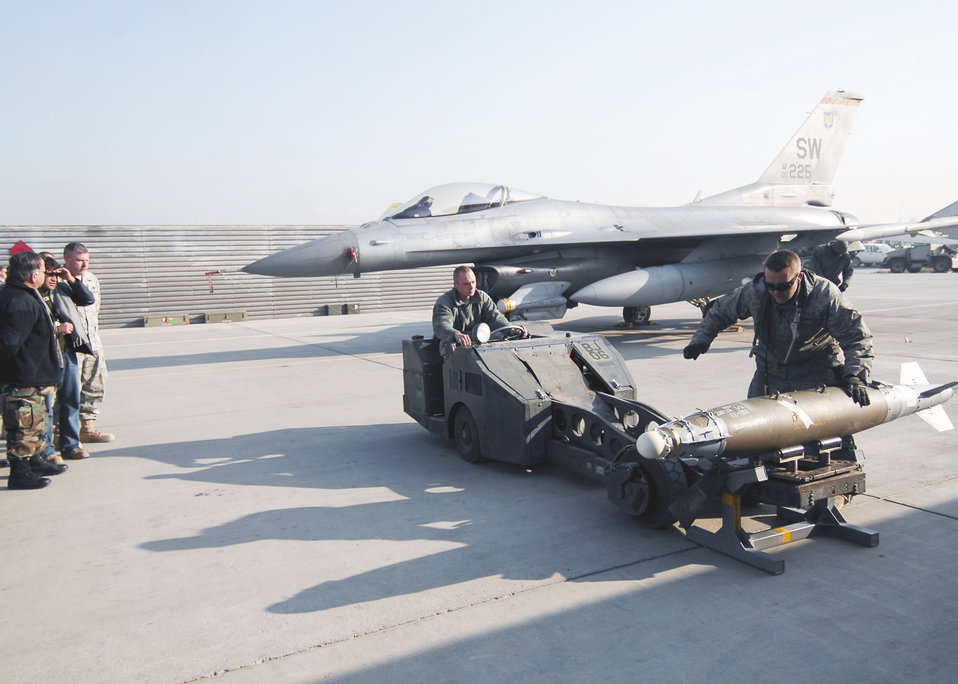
Partnership between air forces in the making

Staff Sgt. Sam Arpy prepares to lift a Joint Direct Attack Munition with a bomb-lift truck while Airman 1st Class John Ackerman prepares to tie down the bomb to the lift Dec. 19, 2009, at Bagram Airfield, Aghanistan. Both weapons load crew Airmen are demonstrating proper loading procedures for Afghan National Army Air Corps Brig. Gen. Abdul Wahab Wardak and other officials.